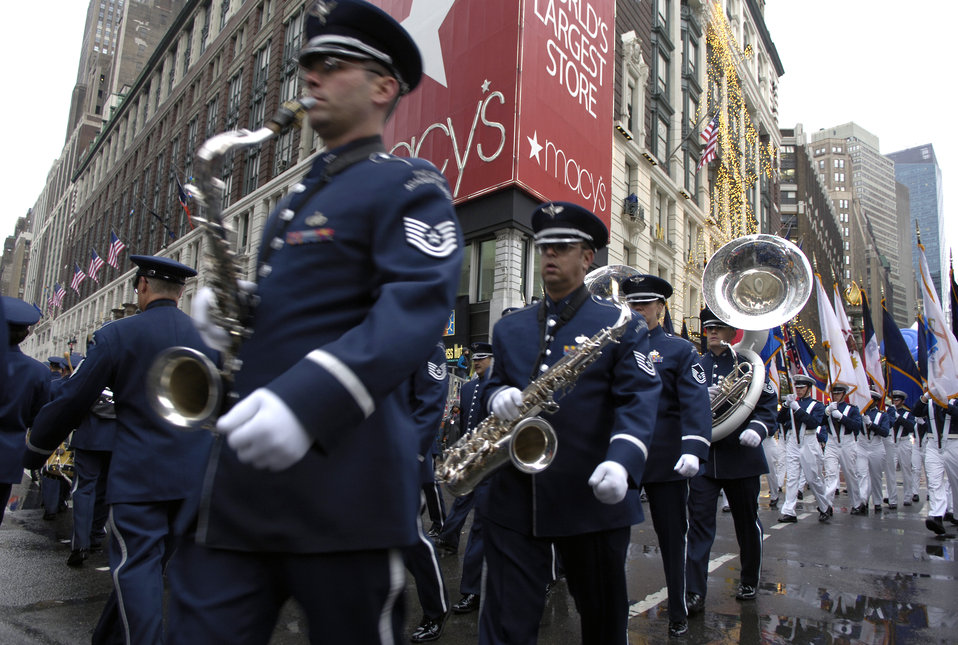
Macy's Thanksgiving Day Parade

The U.S. Air Force Academy Marching Band rounds the corner of Broadway and 34th street at the 80th Macy's Thanksgiving Day Parade in New York City, NY,, Nov. 23,